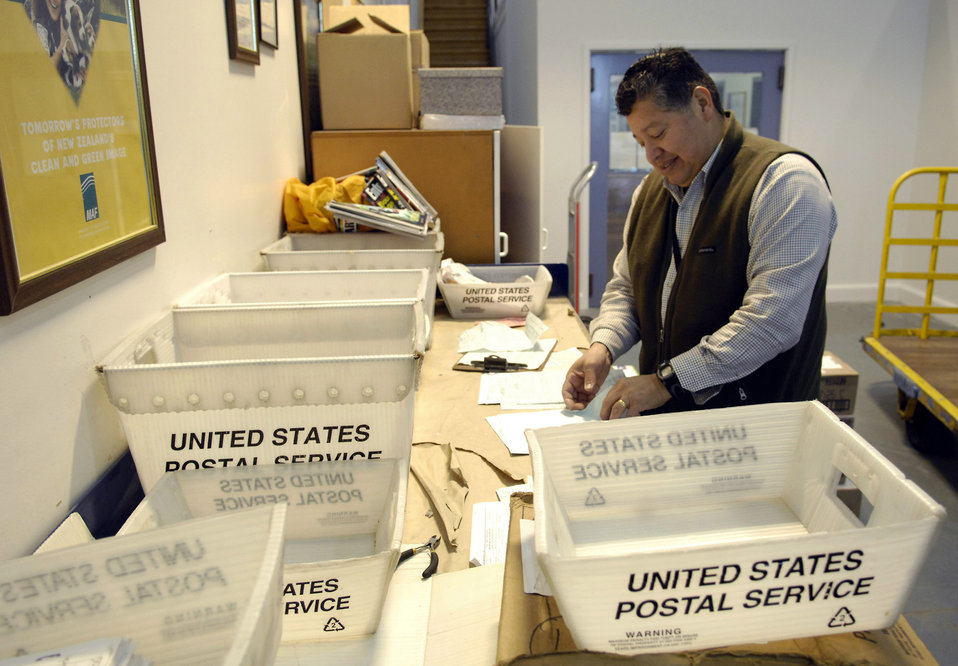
Neither snow nor deep freeze keep mail from Antarctica

Enrique Garza sorts through incoming mail payment documents for Operation Deep Freeze members Aug. 23 at Christchurch, New Zealand. Members of Det. 4, Pacific Air Forces Air Postal Squadron process all mail coming in and out of Antarctica and can handle up to 240,000 pounds of mail during Operation Deep Freeze. Mr. Garza is a finance and postal clerk.